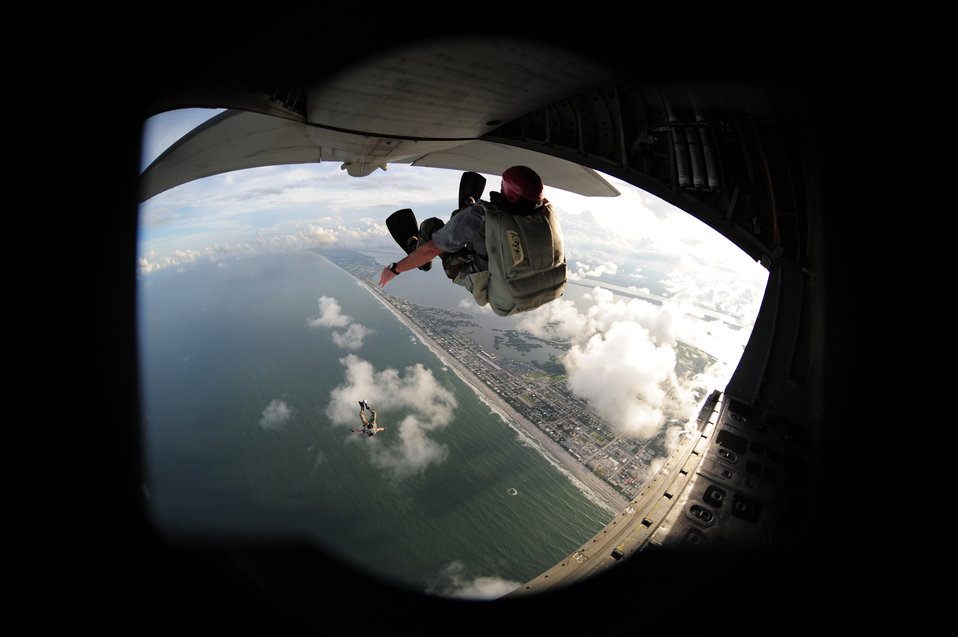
Pararescuemen demonstrate their skills during Air Force Week

A pararescuemen from the 920th Rescue Wing jumps from an HC-130P/N King while performing a freefall rescue demonstration Oct. 27, 2010, at Cocoa Beach, Fla. As part of the demonstration for Air Force Week Cocoa Beach, the Airman will swim to shore.